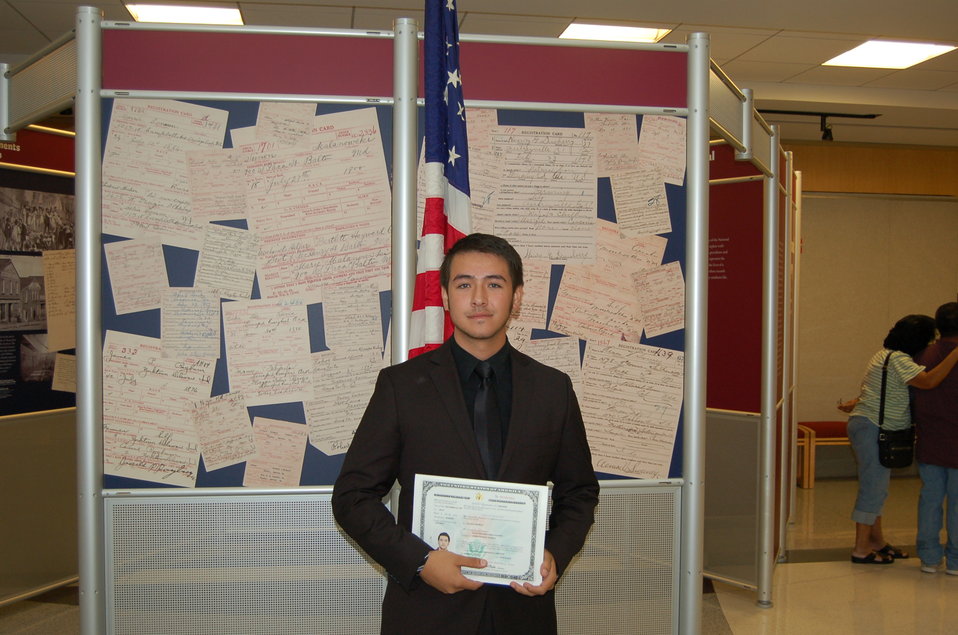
New Citizens